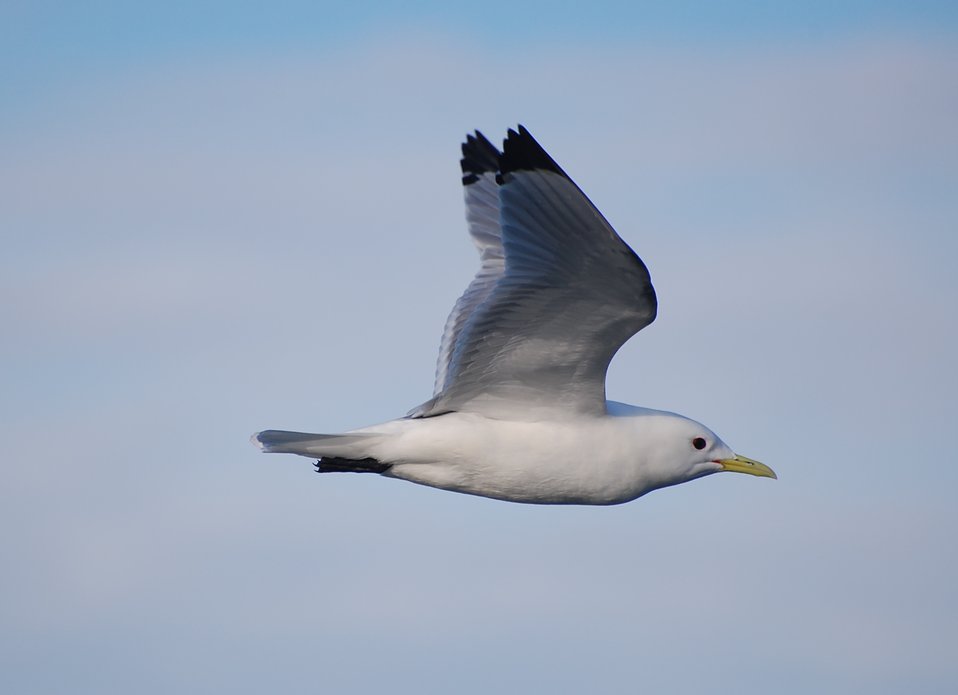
Black-legged Kittiwake

Izembek National Wildlife Refuge